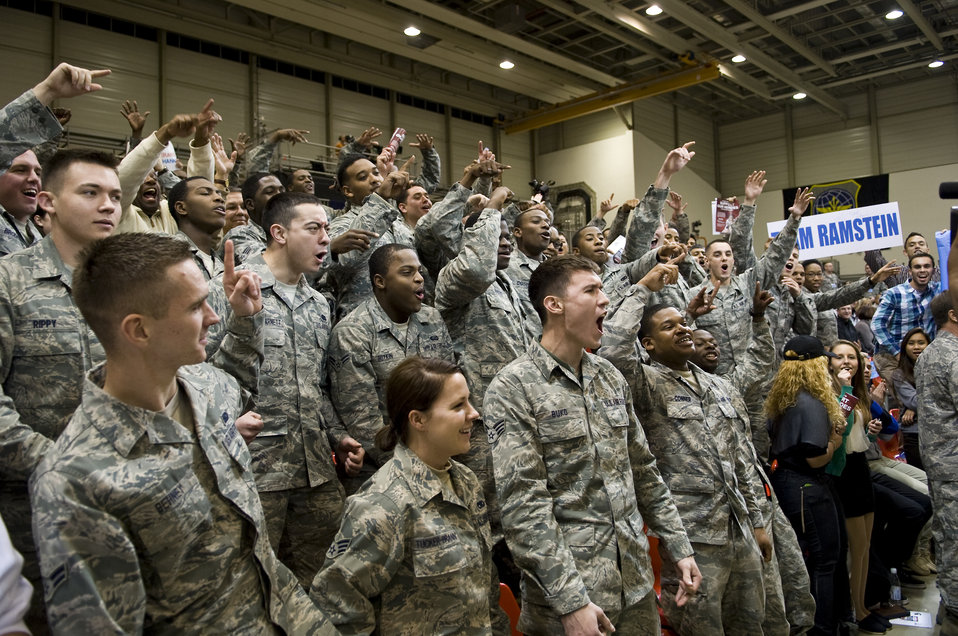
Armed Forces Classic

Airmen cheer for the ESPN camera during the Armed Forces Classic basketball game between the Michigan State Spartans and University of Connecticut Huskies at Ramstein Air Base, Germany, Nov. 10, 2012. The Huskies overcame the Spartans 66-62.